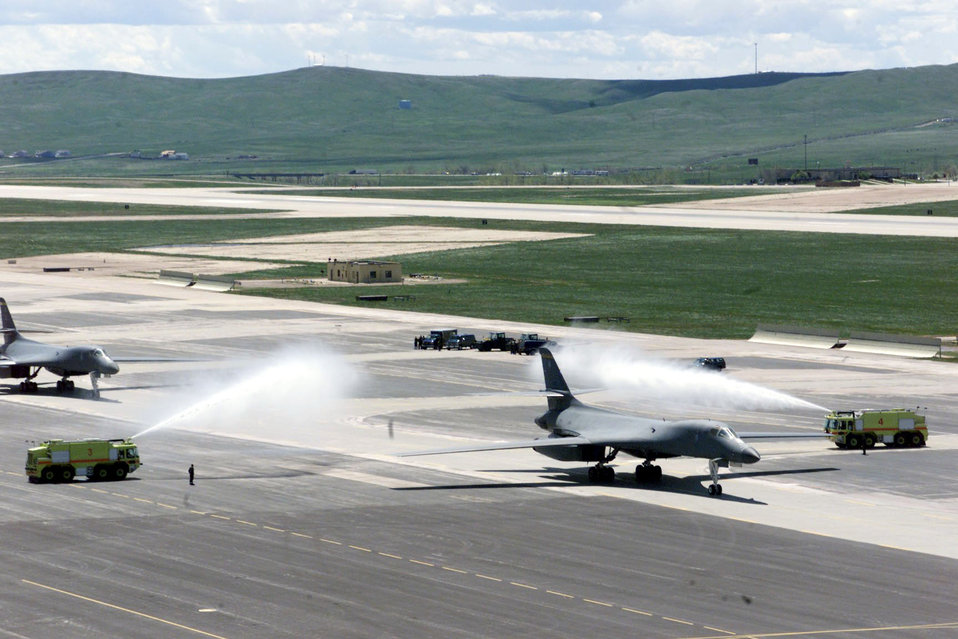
Welcome home shower

ELLSWORTH AIR FORCE BASE, S.D. -- Base firefighters welcome home B-1 Lancer crews here May 13. Six B-1s and their crews return to a crowd of family and friends welcoming them home. As of May 8, B-1s flew 497 combat sorties supporting operations Enduring Freedom and Iraqi Freedom and dropped 4.56 million pounds of munitions.